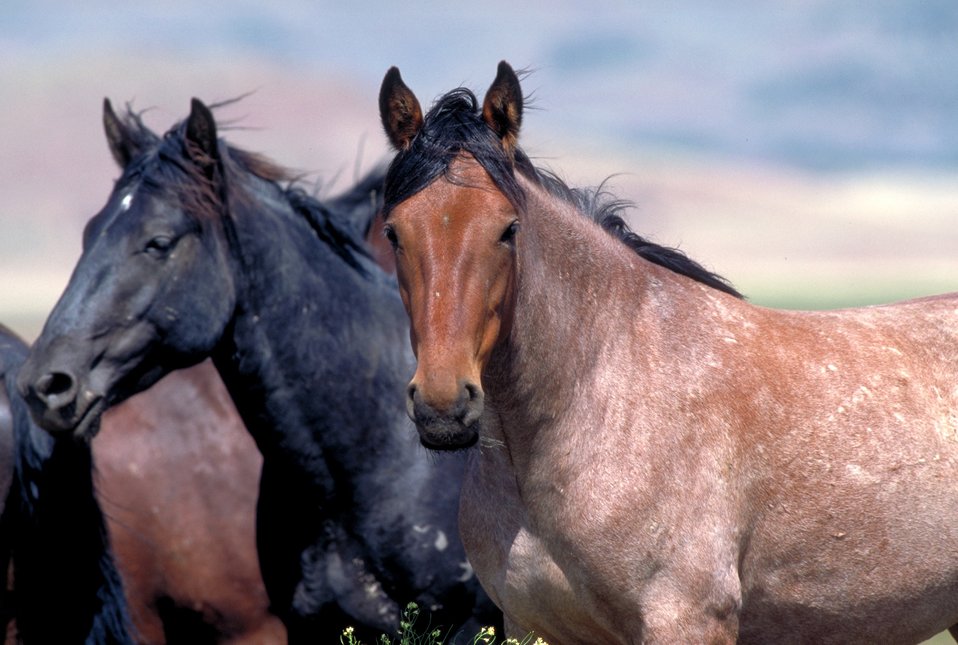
Onaqui Herd near Dugway, Utah.